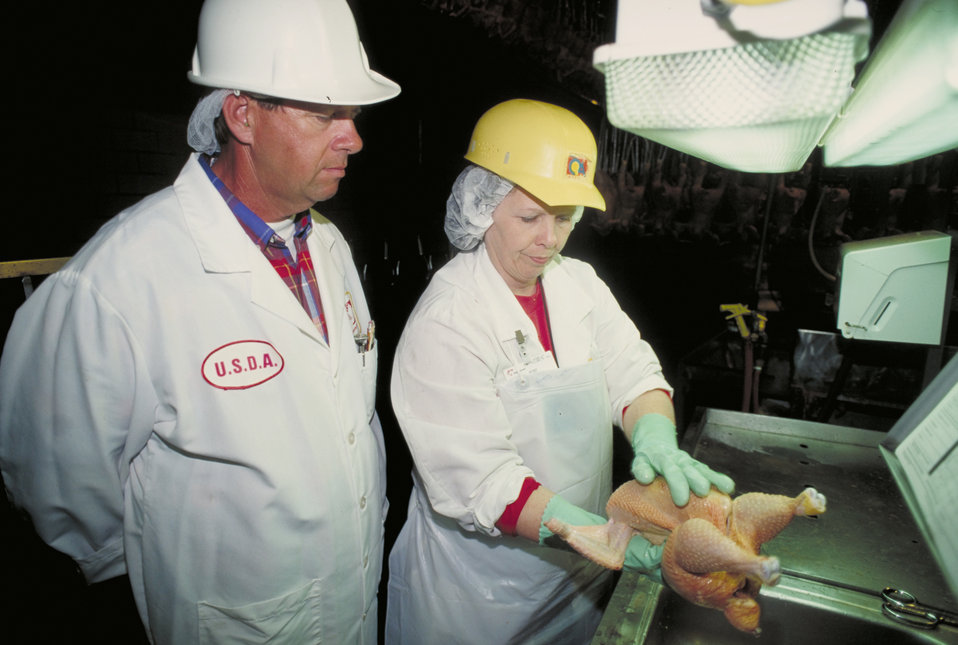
U.S. Department of Agriculture’s (USDA) Food Safety Inspection Service (FSIS) inspectors does a visual examination of a chicken for foreign material at a poultry processing plant in Millsboro, DE on May 13, 1996.